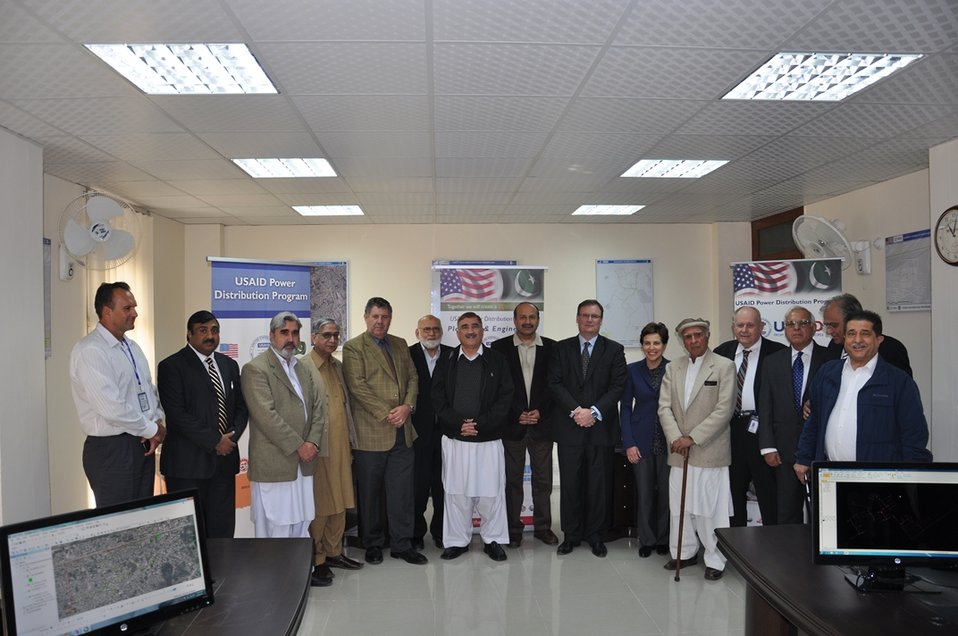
USAID Providing State-of-the-Art Planning and Engineering Equipment to PESCO

The United States is strengthening Pakistan’s energy sector and helping to end energy shortages. In this effort, the U.S. Agency for International Development (USAID) Power Distribution Program’s Ewa Szajner was on hand to support the inauguration of a computer center at the Peshawar Electric Supply Company (PESCO). The PESCO CEO and Board of Directors Chairman were also present at the inauguration with senior management from the USAID Power Distribution Program.